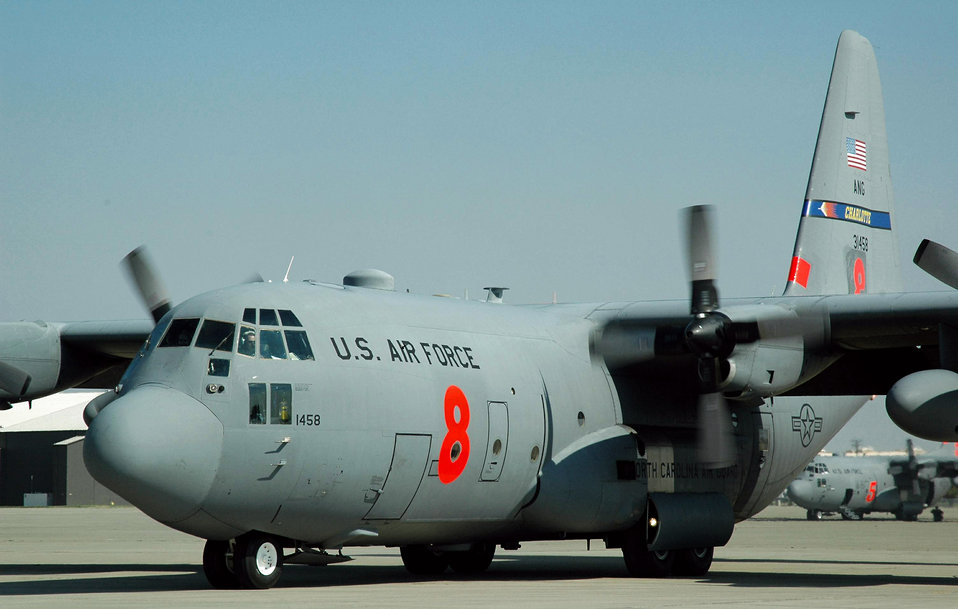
Airmen's support of California fires goes into seventh day

A C-130H Hercules assigned with North Carolina's Air National Guard 145th Airlift Wing taxies down the ramp July 1 at McClellan Airfield in Sacramento, Calif. The aircraft just finished a successful mission of dropping fire retardant on the Piute fire burning in California's Sequoia National Forest.